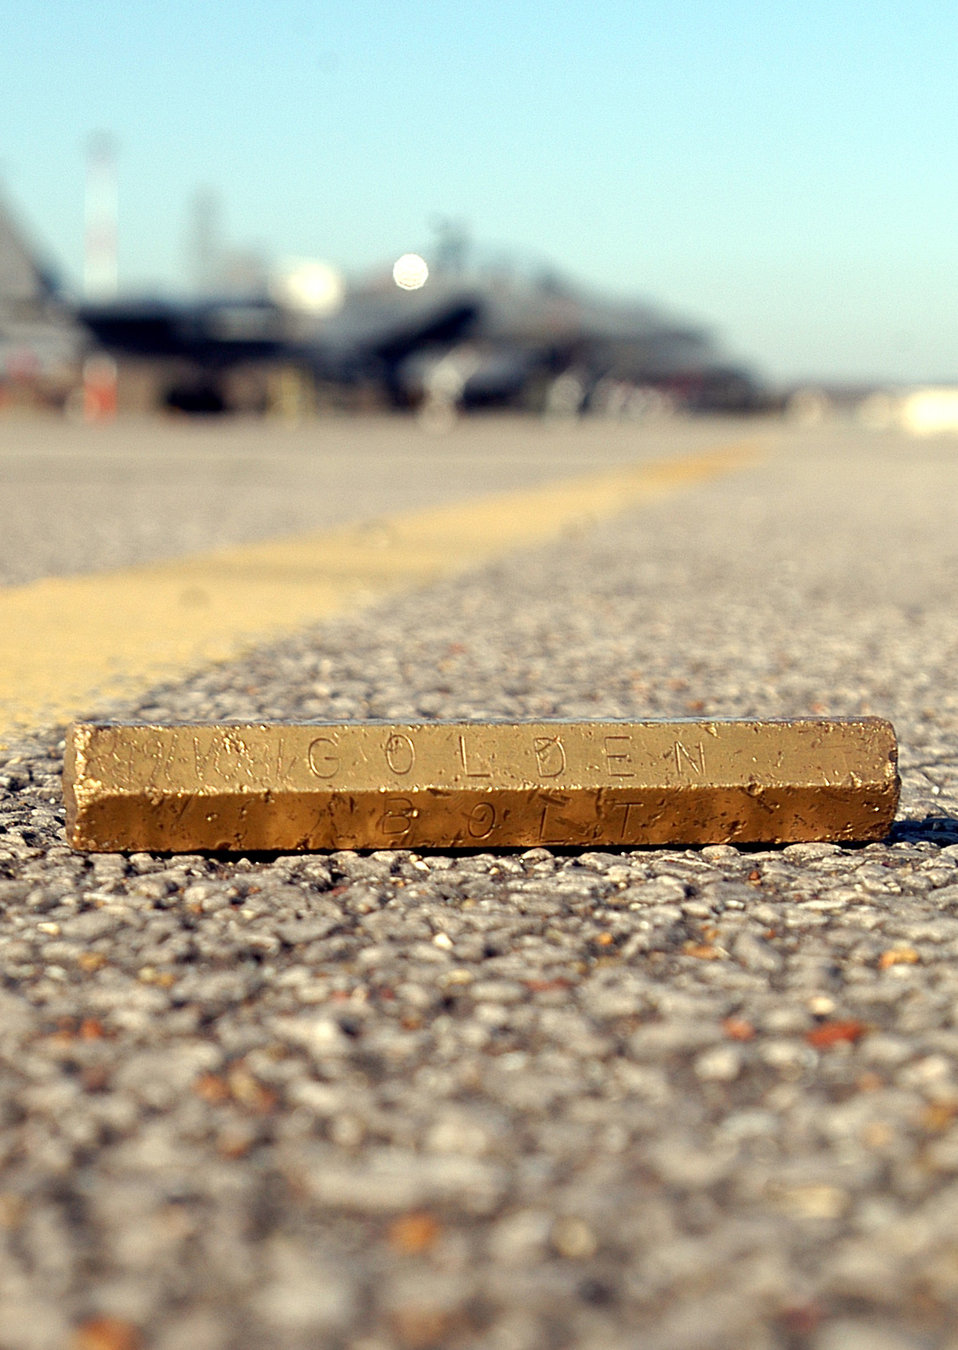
Golden Bolt improves FOD awareness

The Golden Bolt awaits discovery on the flightline at Royal Air Force Lakenheath, England. Senior aircraft maintainers place the bolt somewhere on the flightline once each month, and the finder wins prizes. The program helps improve awareness of foreign object and debris damage on the flightline.